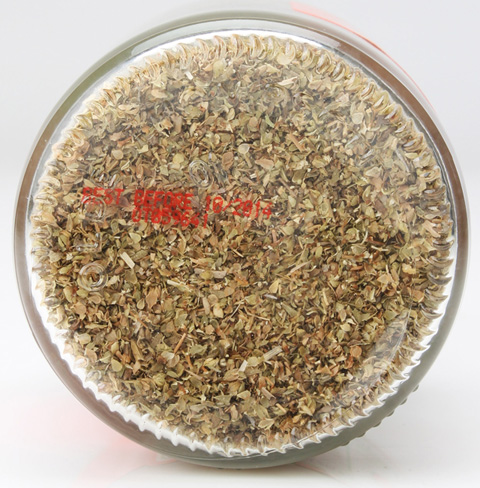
RECALLED - Organic Oregano

July 12, 2013 - Product Recall - Olde Thompson Inc. Issues a Voluntary Recall of Earth’s Pride Organics: Organic Oregano 2.2 Oz Glass Jars With Cork Closure Due to Possible Salmonella Risk.